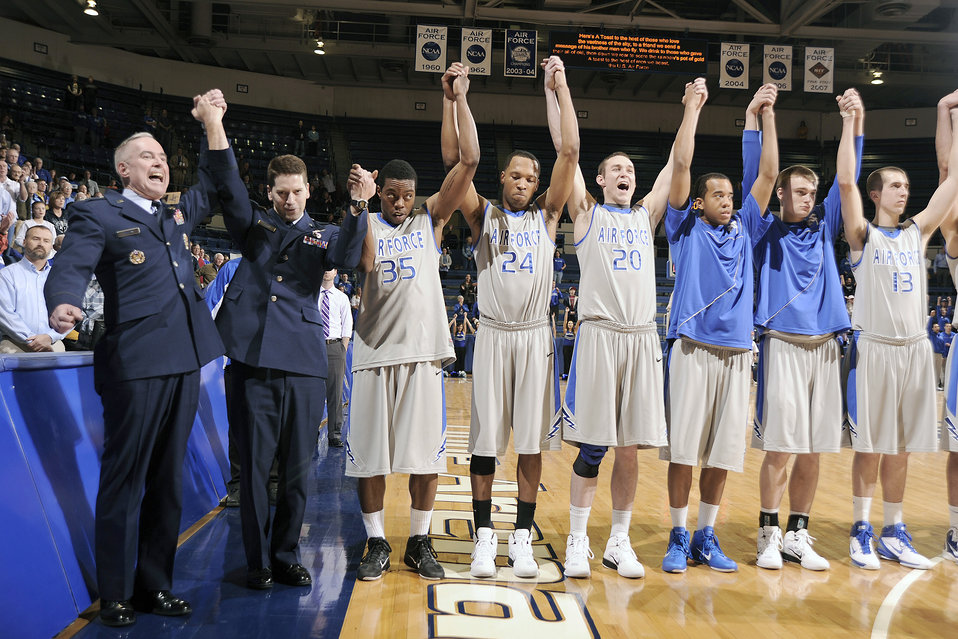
Falcons vs. Horned Frogs

The Air Force Academy Falcons celebrate a win against the Texas Christian University Horned Frogs March 2, 2011, at the Academy's Clune Arena.